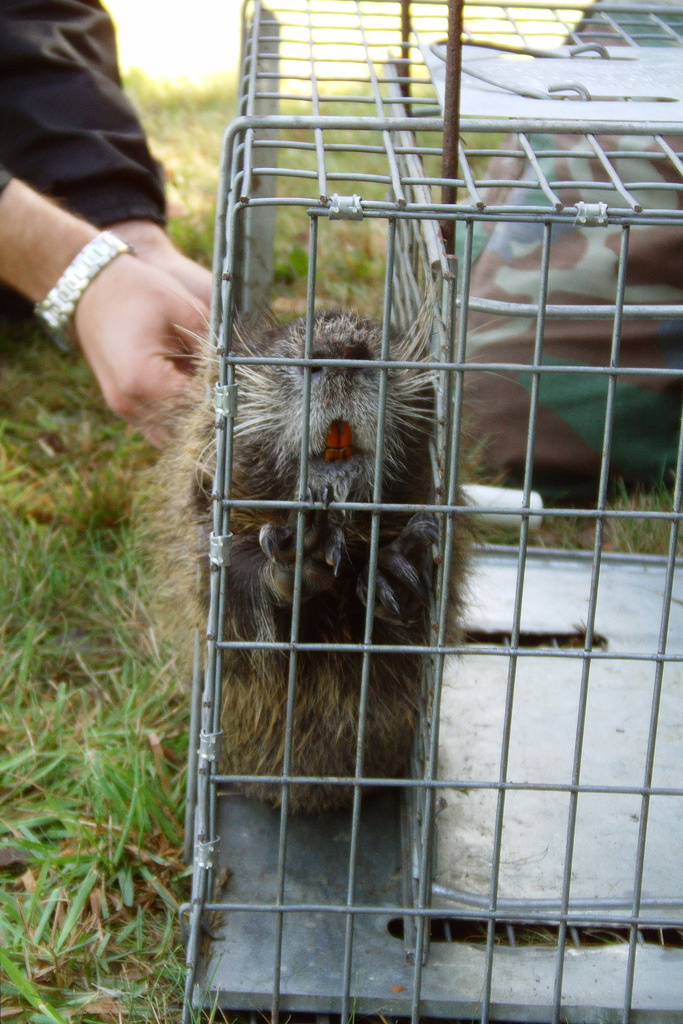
A Caged Nutria Awaits Tagging

A captured nutria waits to get a tail tag. Tagging the animals will help biologists to better understand the animal and prevent their spreading.